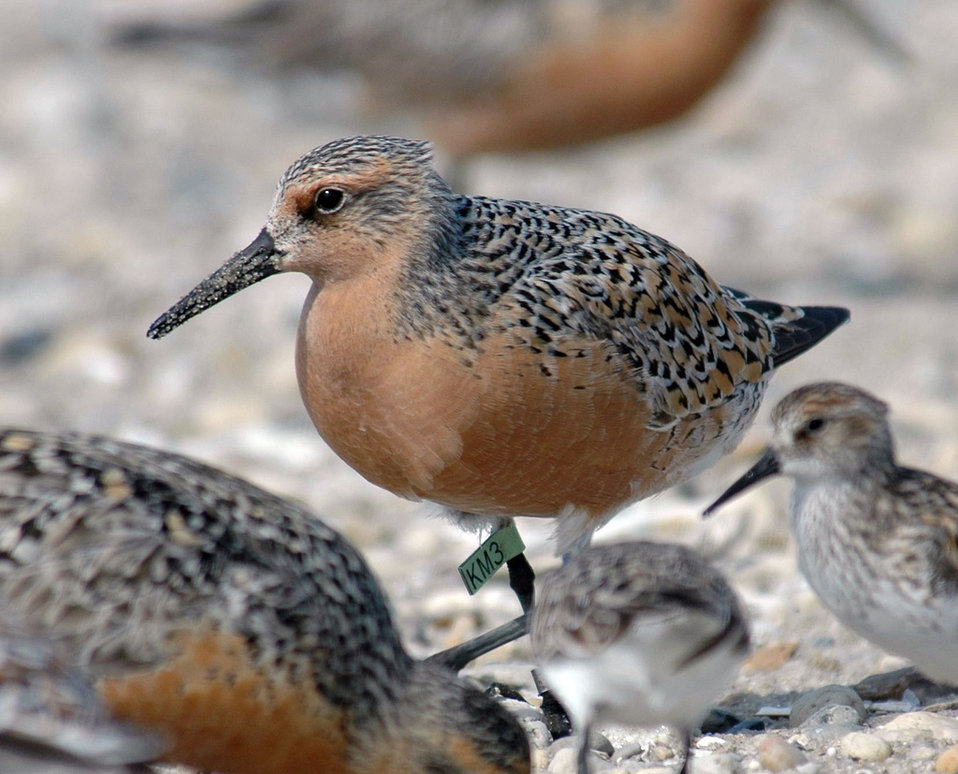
red knot

Bombay Hook National Wildlife Refuge, DE